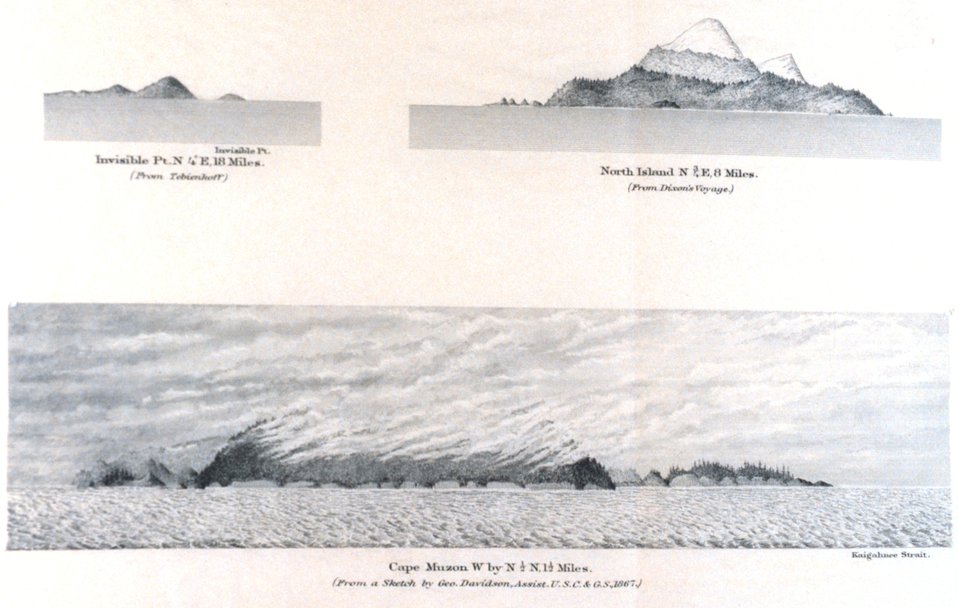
Invisible Point. North Island. Cape Muzon. In: Pacific Coast Pilot Alaska Part I 1883. P. 64. Library call number VK943 .N3 1883.